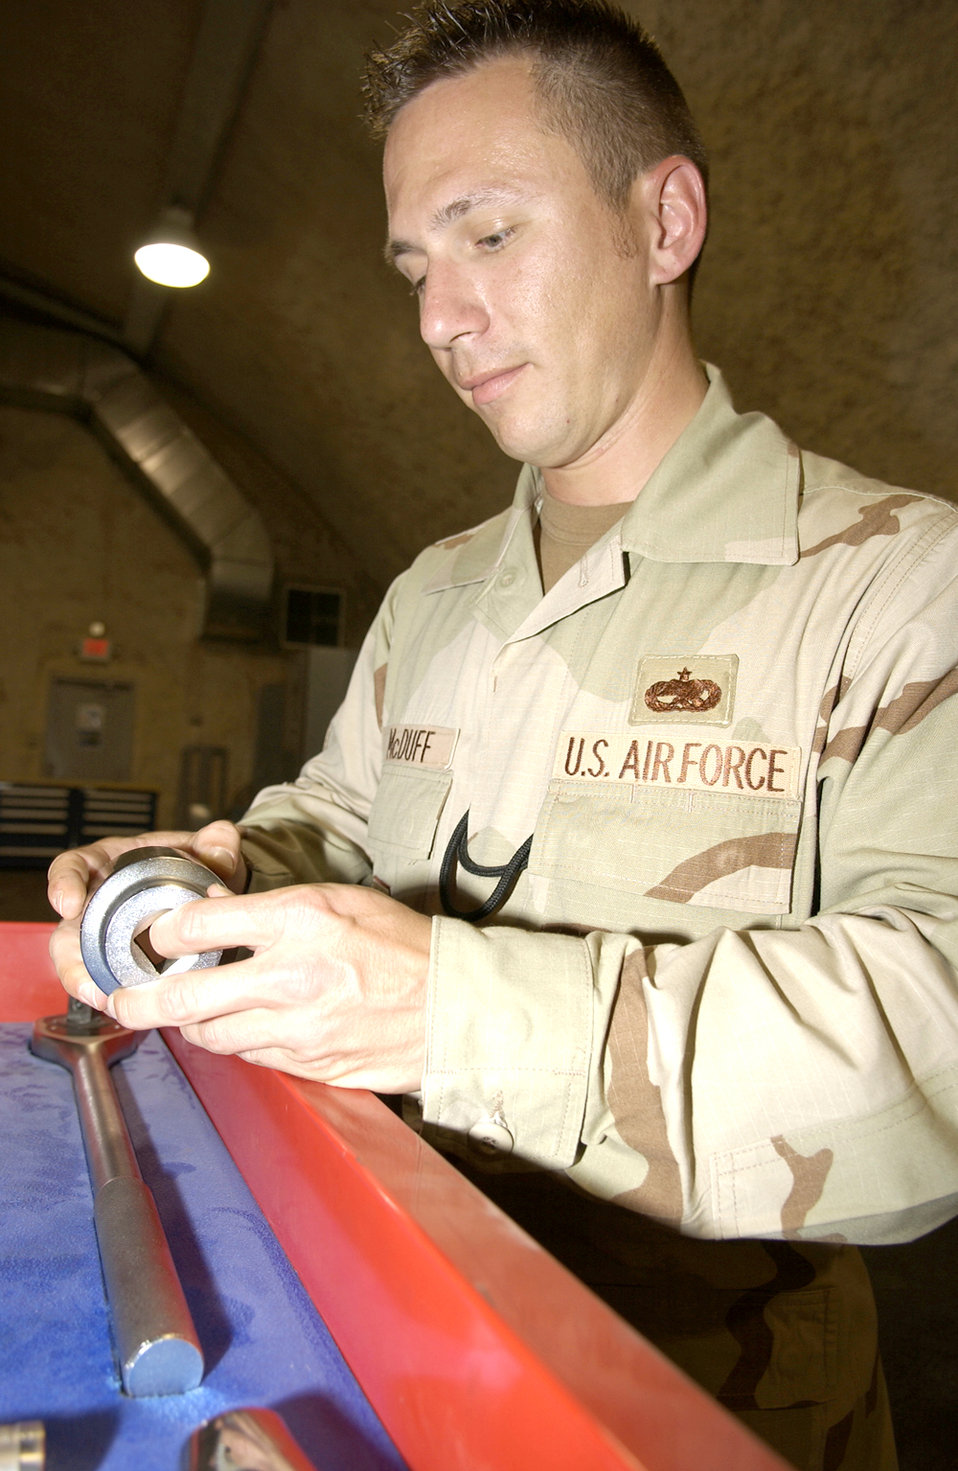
Airmen guard diverse flying mission

SOUTHWEST ASIA -- Tech. Sgt. Shawn McDuff inspects a composite tool kit for erosion and damage at a forward-deployed location April 12. He is the 379th Expeditionary Maintenance Group quality assurance chief inspector and is deployed from Tinker Air Force Base, Okla.